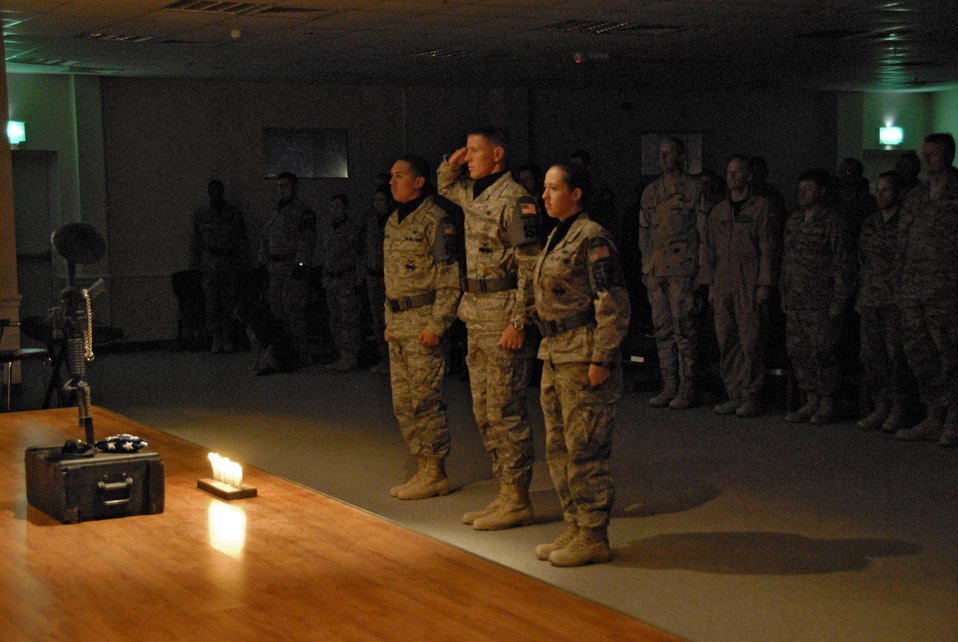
Airmen honor fallen comrades

A member of the 386th Expeditionary Security Forces Squadron flag detail renders a salute to a memorial during a candle light vigil May 13 at an air base in Southwest Asia. The candlelight vigil was a memorial service designated to pay homage to law enforcement officers who selflessly gave their lives in the line of duty during the past year including Air Force Office of Special Investigation special agents, security forces members and military working dogs.